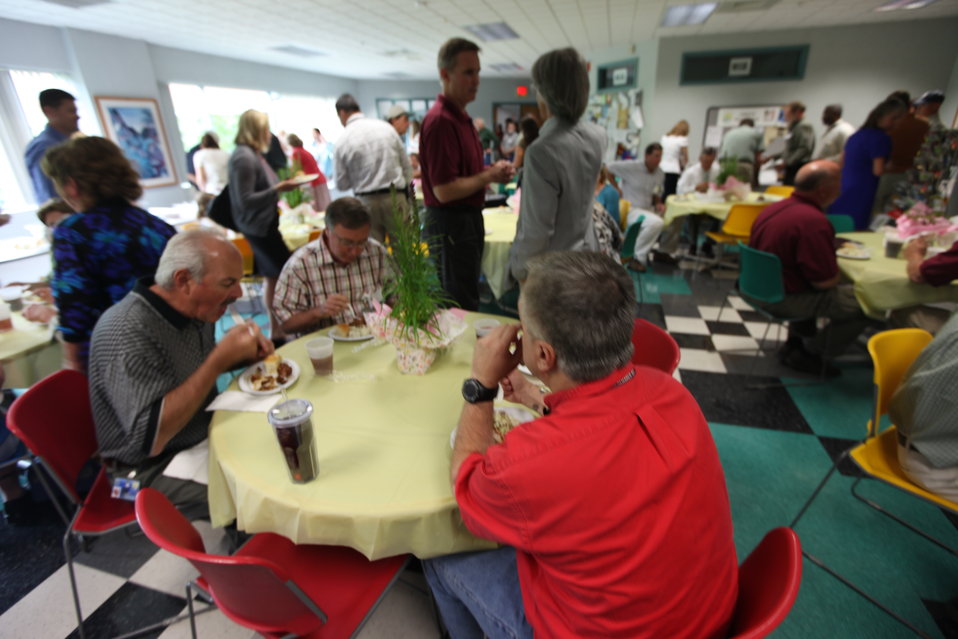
Northeast Region Employee Appreciation Awards

Luncheon